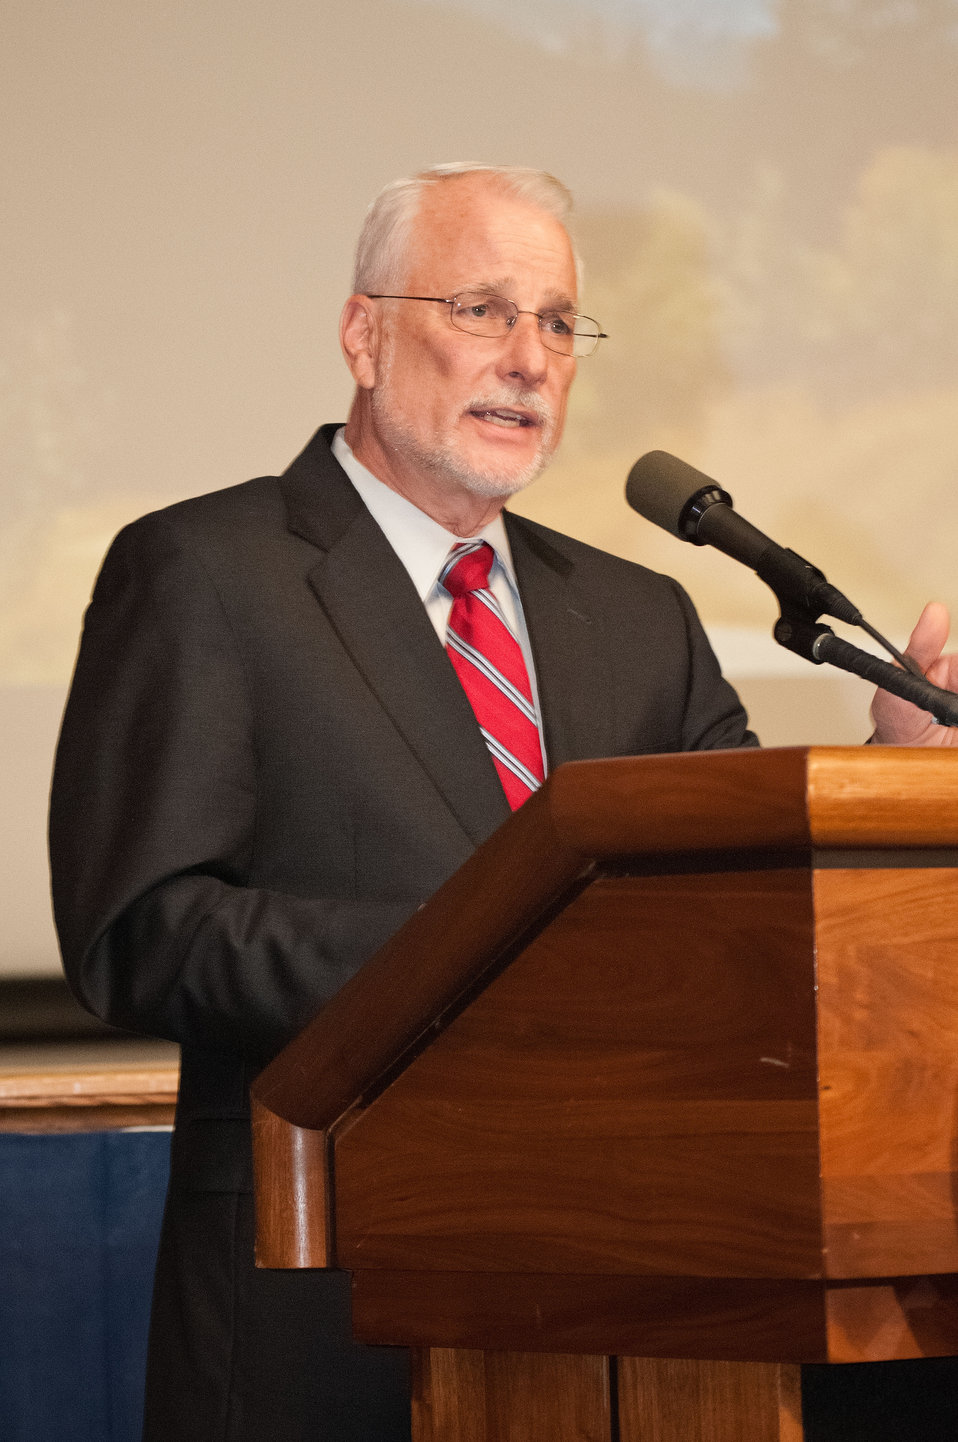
U.S. Department of Agriculture (USDA) Natural Resources Conservation Service (NRCS) Chief Dave White addresses the National Farmers Union at USDA in Washington, D.C. on Monday, Sept. 10, 2012.